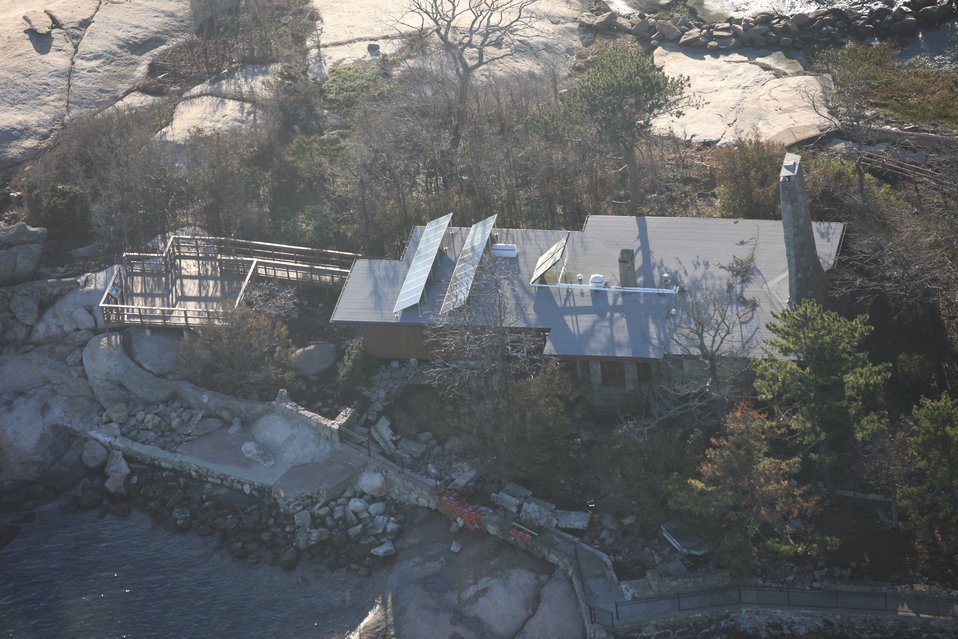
Stewart B. McKinney National Wildlife Refuge-Outer Island (CT)

An aerial view of damage from storm Sandy on Outer Island at the Stewart B. McKinney National Wildlife Refuge.